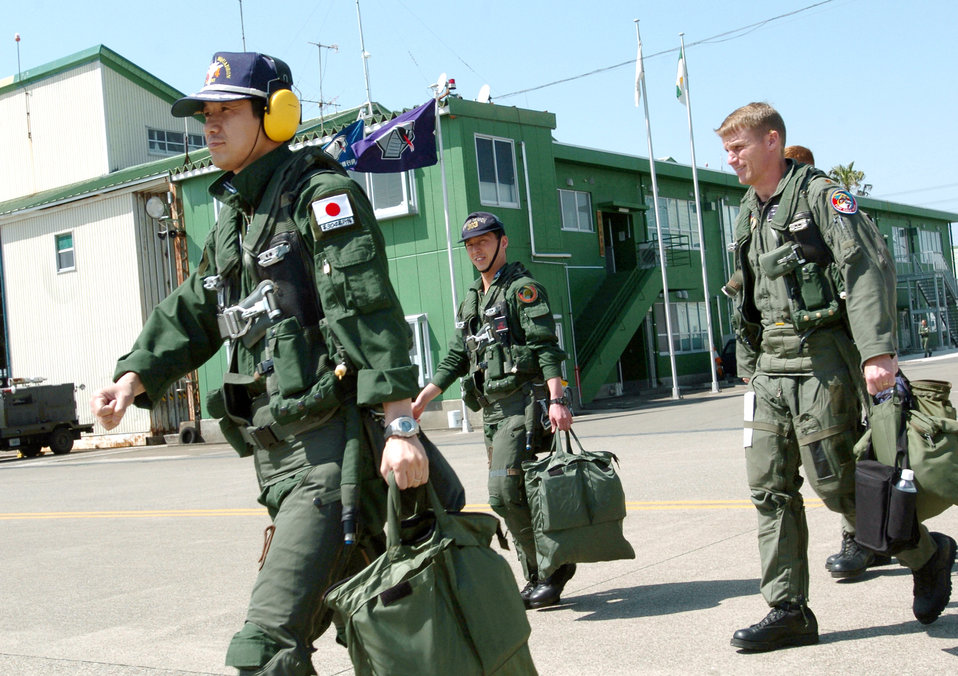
U.S., Japanese Airmen train together during air refueling

NYUTABARU AIR BASE, Japan -- (From left) Japanese Majs. Yasuhiro Sudo and Kouji Takada walk with Maj. Brian Bergeron as they prepare for an afternoon mission during hands-on air-to-air refueling training here. Japanese F-15 Eagle pilots, under the watchful eye of U.S. Airmen, are getting trained to qualify in aerial refueling. Major Bergeron is an instructor pilot with the 325th Operations Support Squadron at Tyndall Air Force Base, Fla.